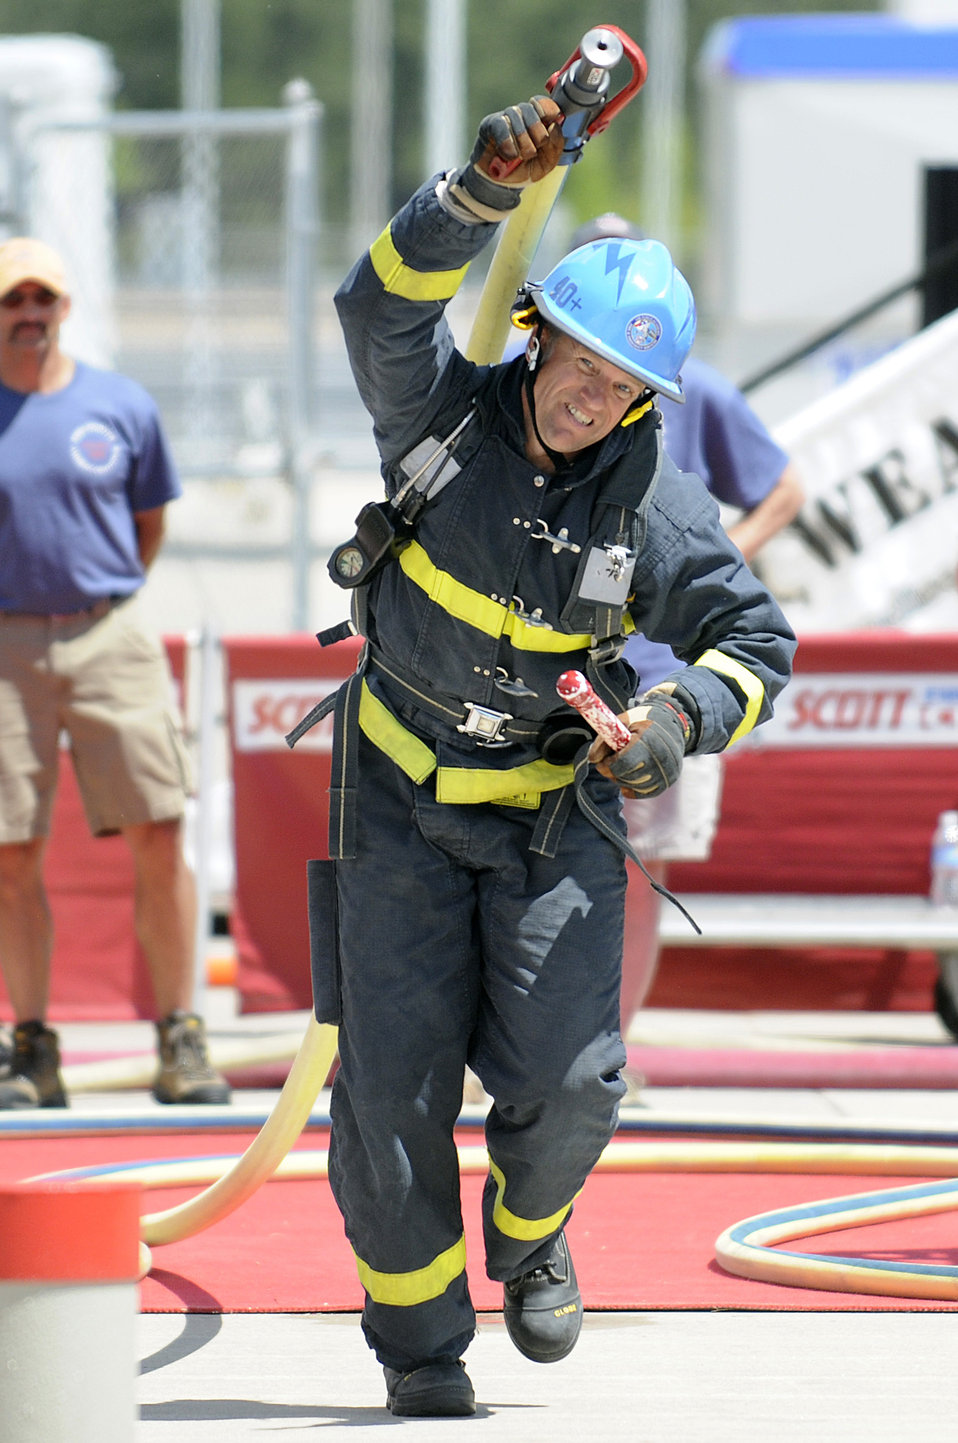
Firefighters Combat Challenge

Air Force Academy firefighter Ron Prettyman, 40 relay and tandem team member, drags the fire hose towards the target during the two-day regional Firefighter Combat Challenge competition which was held June 24/25 at the Air Force Academy's Falcon Stadium. The event showcased the skills of nearly 200 military and civilian firefighters, which included 28 academy firefighters. The national and world championships will be held in October and November, of which all academy firefighters qualified to participate.